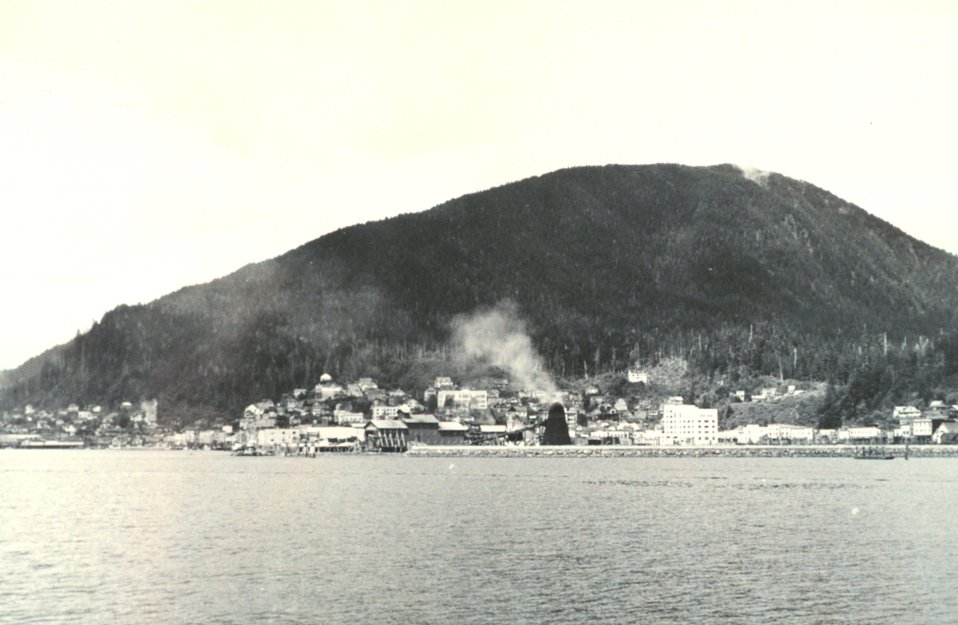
View of Juneau from seaward